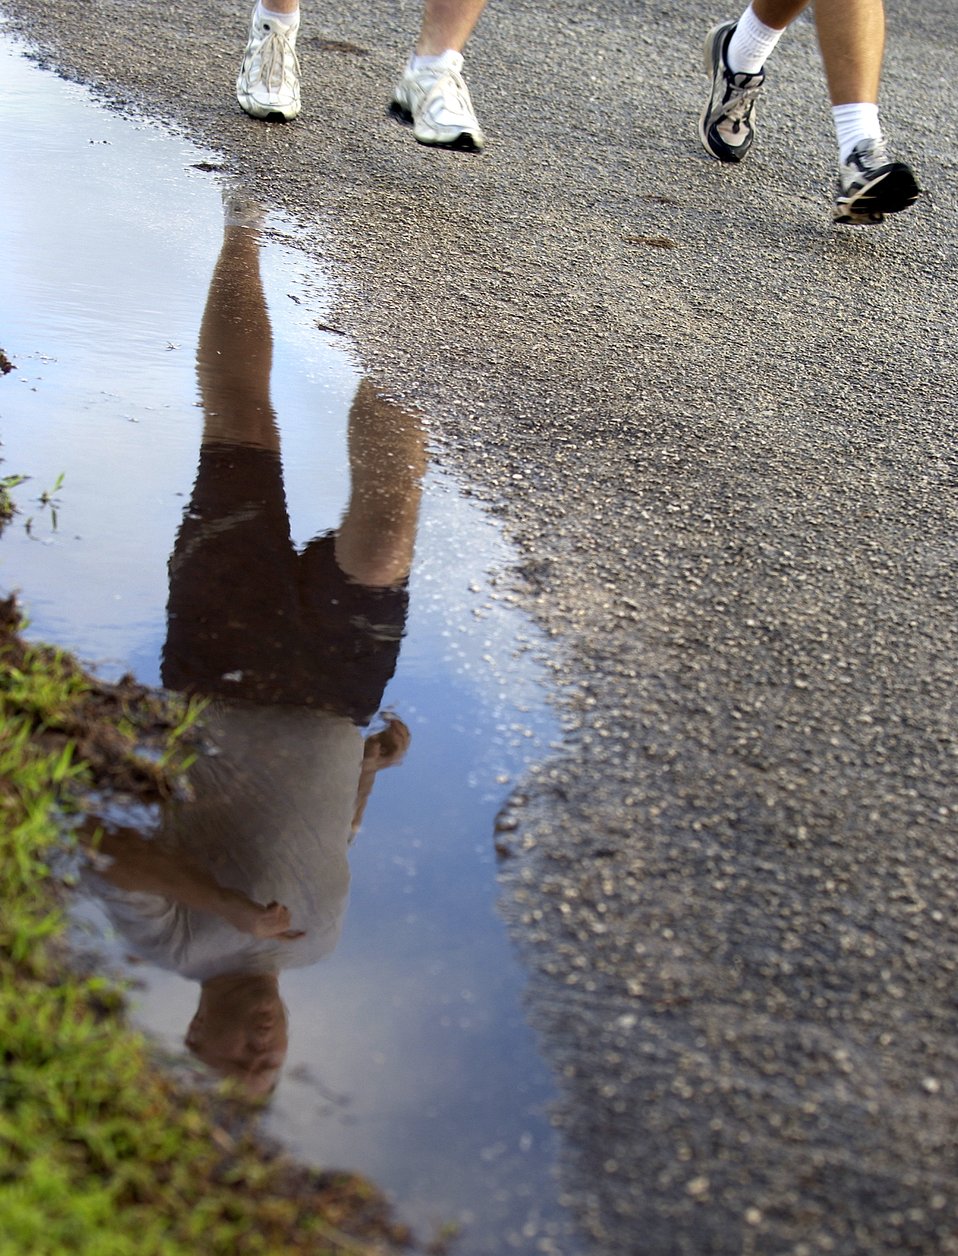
Reflection

A Team Andersen member catches a reflection of himself in a pool of water during the wing run Nov. 21. Throughout the day there were also wing and squadron commanders calls. The main objective of Wingman Day was to strengthen the morale and welfare of units by devoting time to building relationships between co-workers, examining organizational strengths and vulnerabilities, and planning for the coming year.